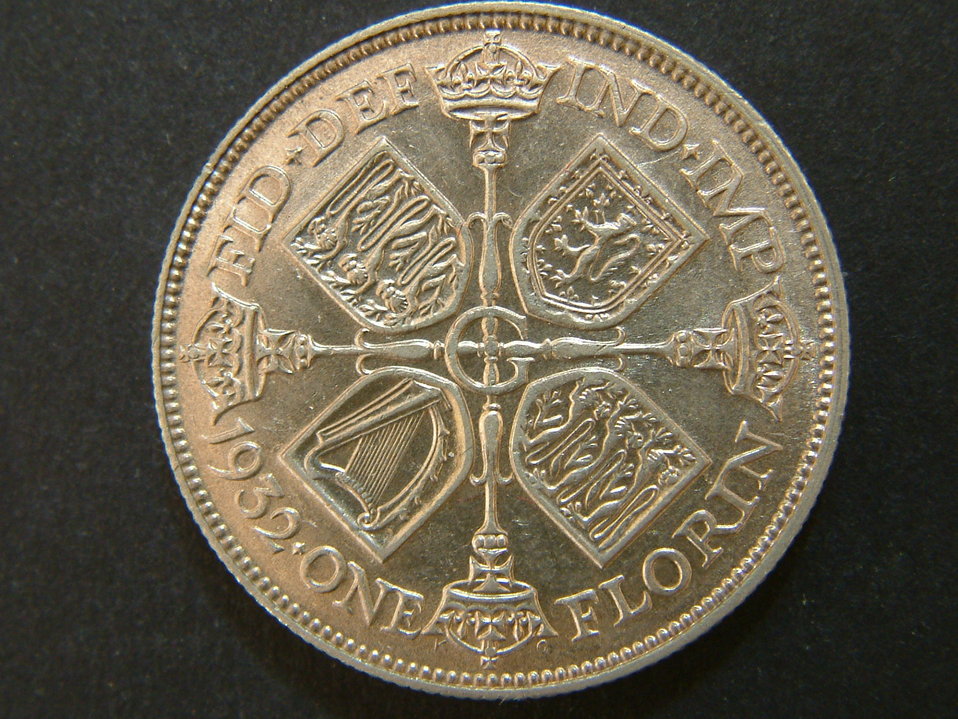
Reverse of a 1932 George V Florin